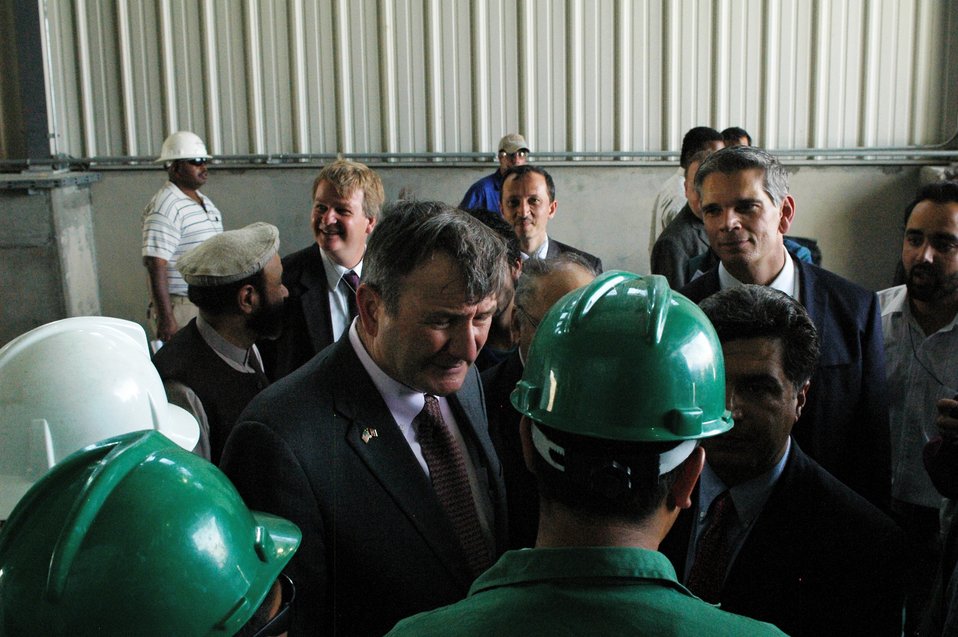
105 MW Tarakhil Power Plant Handover